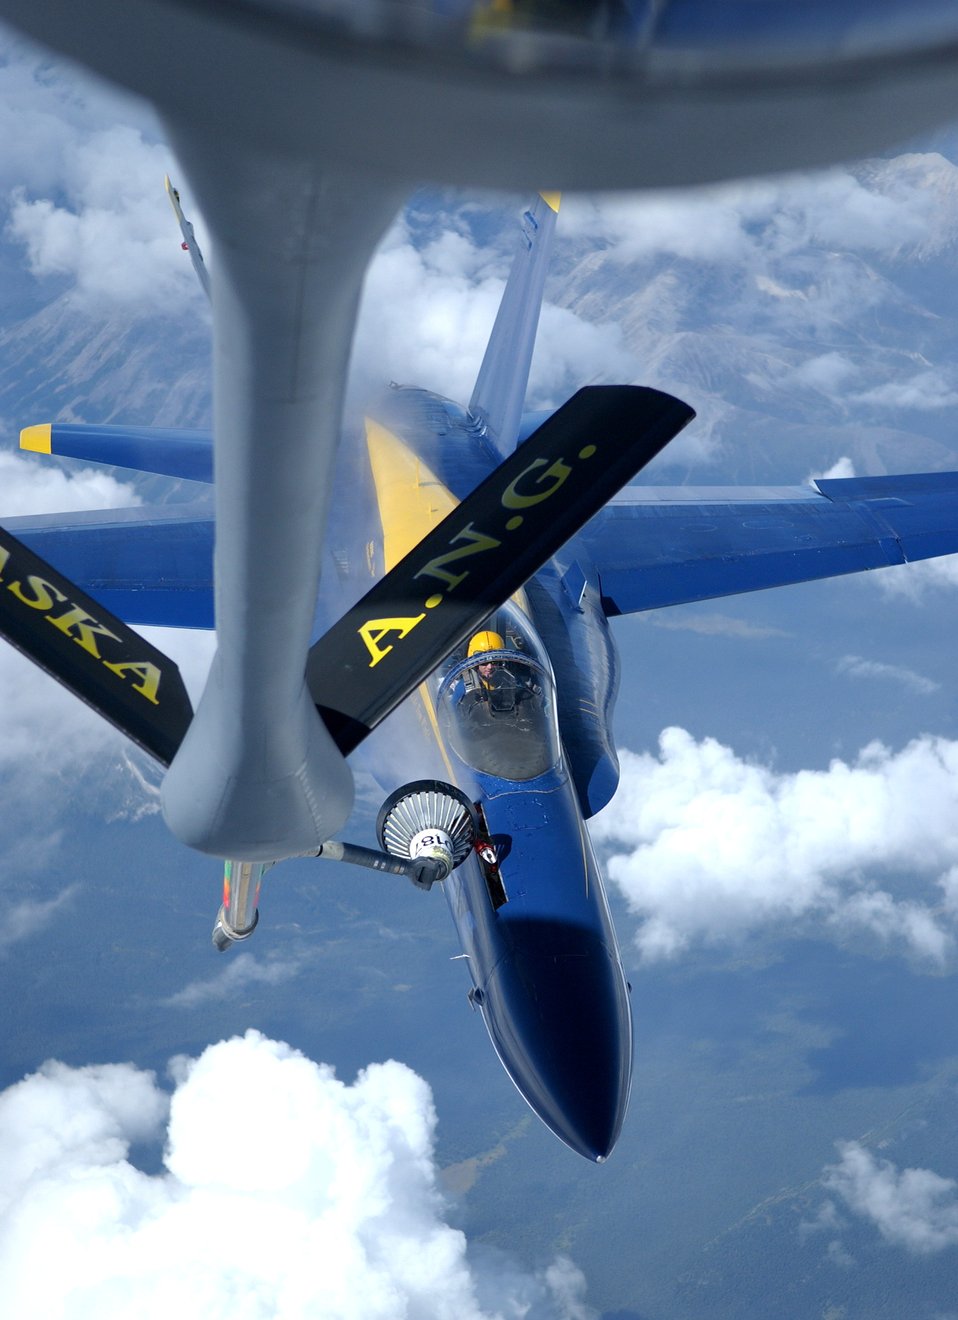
Blue Angels over Alaska

A KC-135 Stratotanker refuels an F/A-18 Hornet from the Navy's Blue Angels on its way from an air show at Elmendorf Air Force Base, Alaska, on Aug. 14. The KC-135 is with the 168th Air Refueling Wing at Eielson AFB, Alaska.